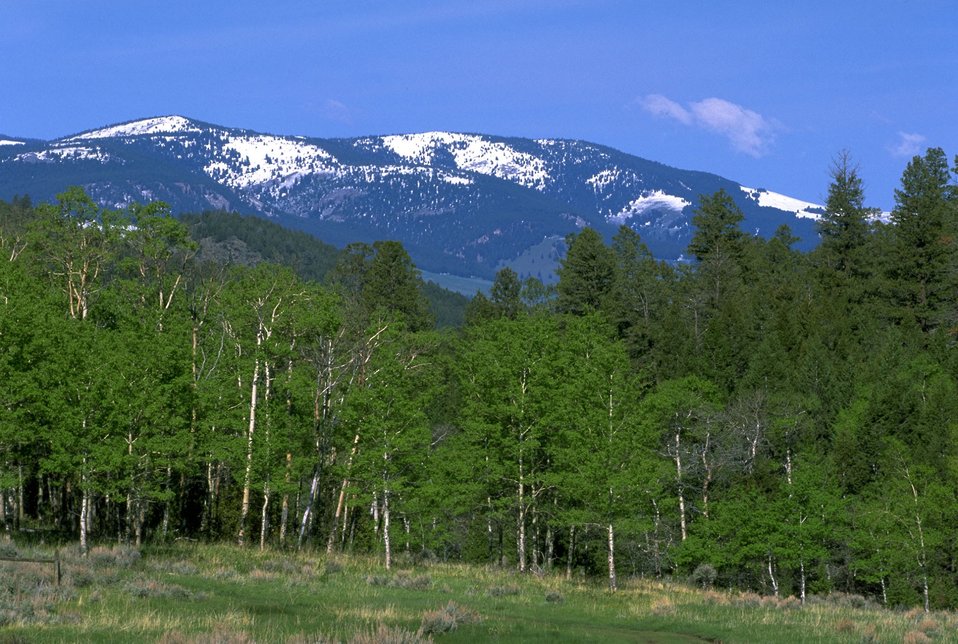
Scenic view of snowy mountains above the trees